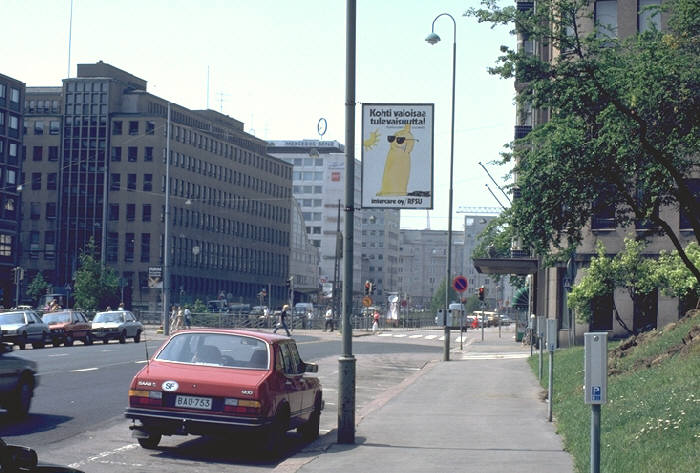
Sign promoting condom use, Helsinki, Finland.